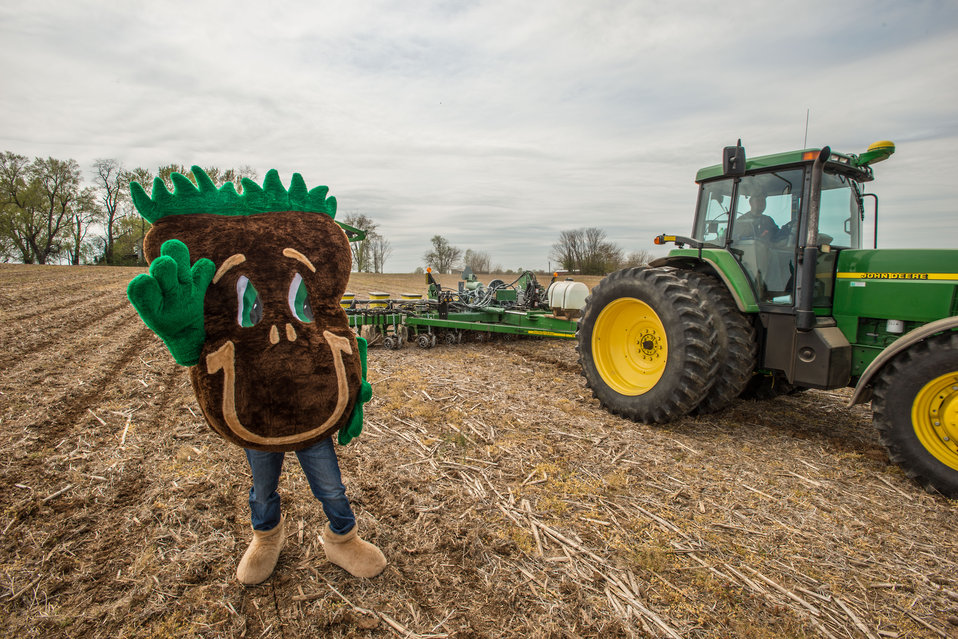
The U.S. Department of Agriculture’s (USDA) Natural Resources Conservation Service (NRCS) mascot Sammy Soil on the Sunny Ridge Farm in Laytonsville, MD on Monday, Apr. 28, 2014. The Sunny Ridge Farm owned by the Stabler family uses a number of conservation practices to promote soil health and water quality. No-till cropping systems use cover crops that help water soak deep into the soil and machines work lightly on top of the soil preserving vertical pores that are water’s pipeline to the roots. Cover crops prevent erosion, improve soil health, hold water, supply nutrients, and suppress weeds and pests. Fenced waterways keep livestock away from the streams and drainage to low points of fields, which allows grass, trees and other vegetation to grow. The plants take up nutrients from the livestock effluent, reducing pollution to waterways. The farm also has a well-designed agrichemical facility for an environmentally safe area to handle and store tanks of on-farm chemicals.